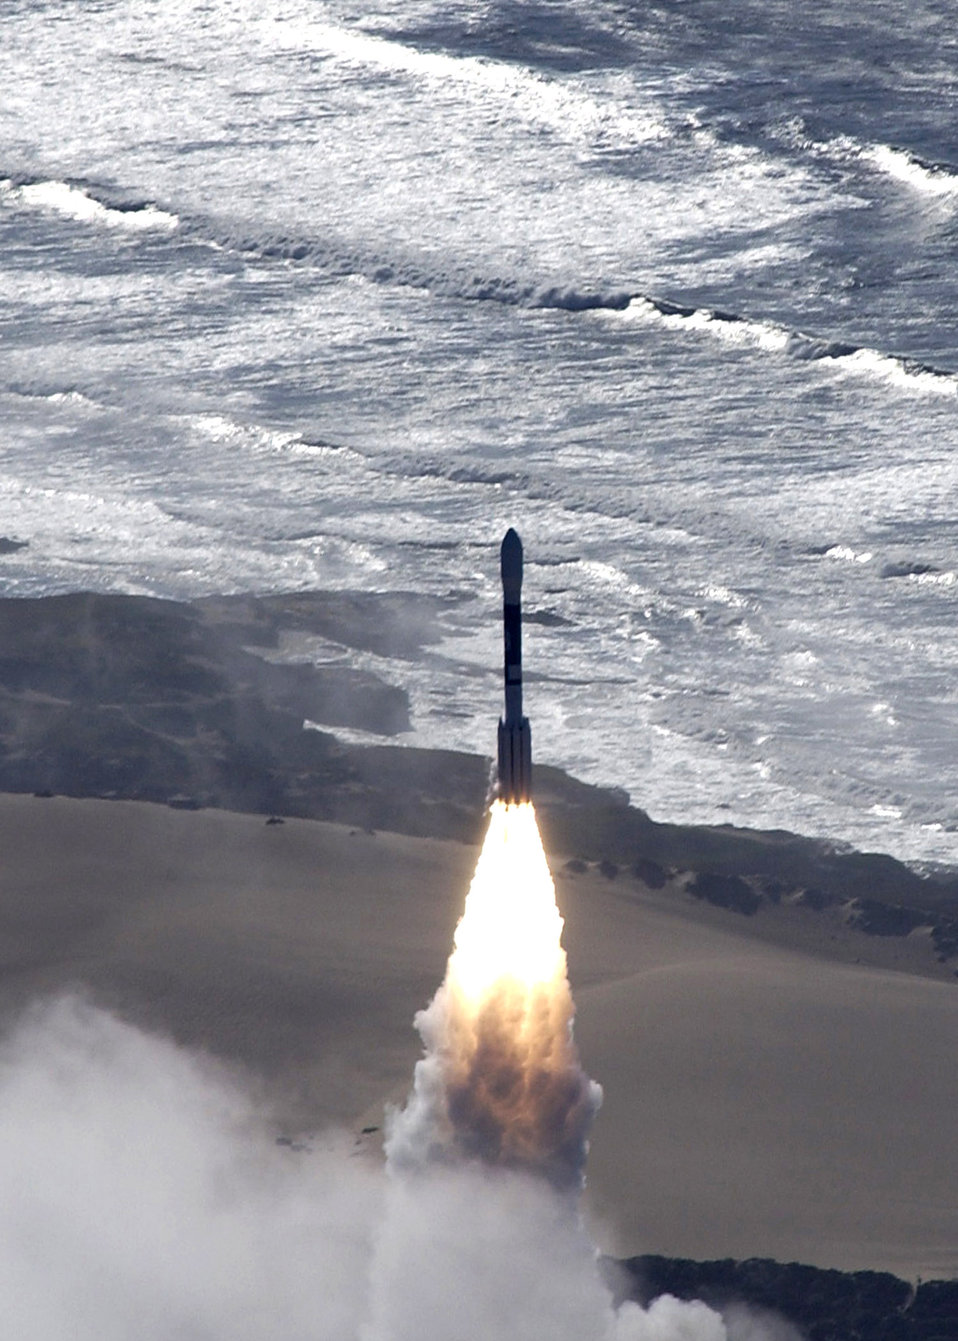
Vandenberg successfully launches Delta II

A Delta II rocket carrying a National Reconnaissance Office satellite successfully launches Dec. 14 from Space Launch Complex-2 at Vandenberg Air Force Base, Calif.